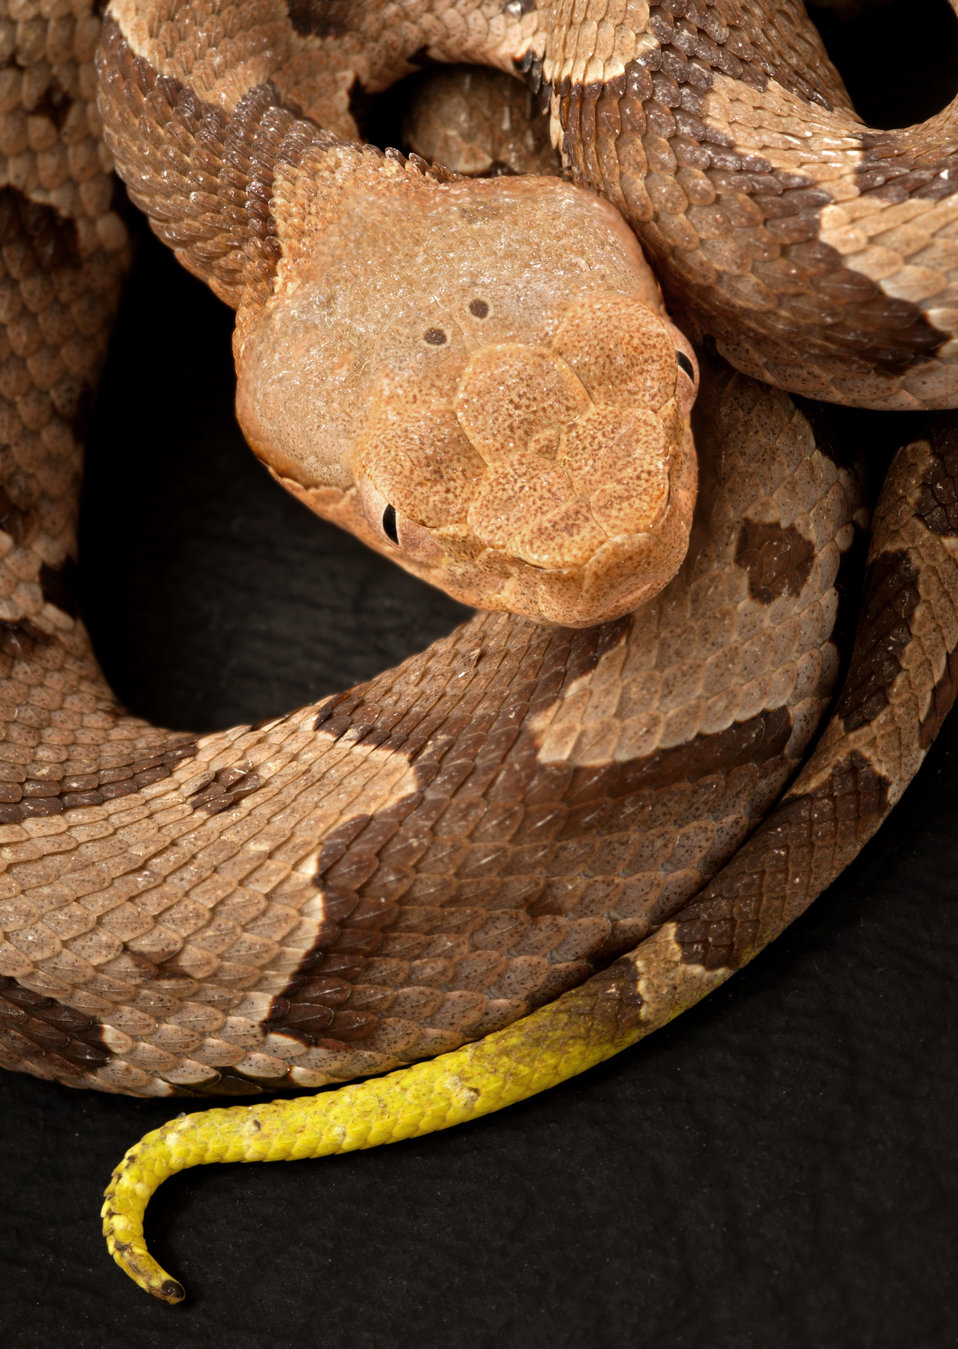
This 2008 photograph depicted a juvenile venomous 'Southern copperhead' snake, Agkistrodon contortrix, as it was coiled in a Decatur, Georgia basement.